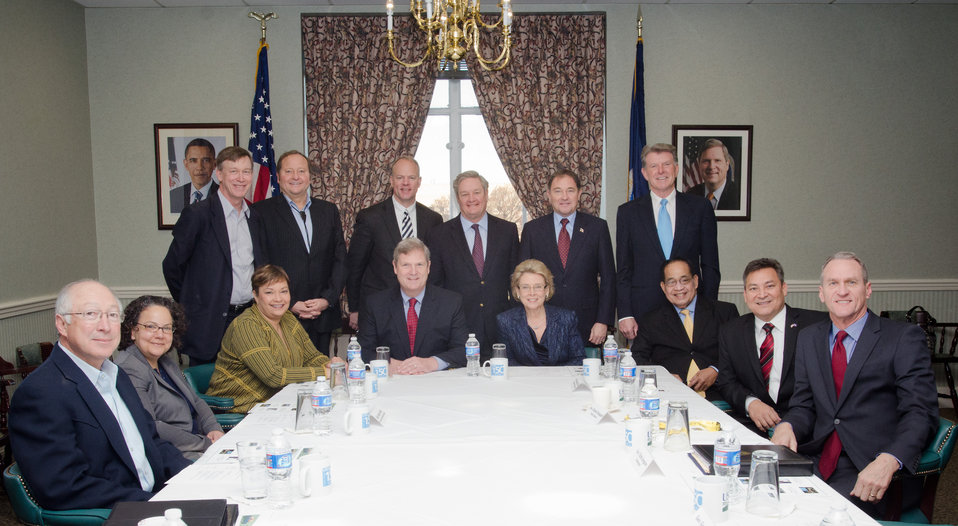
Agriculture Secretary Tom Vilsack hosted a breakfast for Western Governors and Federal Officials, at the Lincoln Room at the United States Department of Agriculture headquarters, in Washington, D.C., on Sunday, February 26, 2012. This event was followed by his speech at the National Governor’s Association Education, Early Childhood and Workforce committee. Seated, left to right, Interior Secretary Ken Salazar, Council on Environmental Quality Chair Nancy Sutley, Environmental Protection Agency Administrator Lisa Jackson, Agriculture Secretary Tom Vilsack, Washington - Governor and Western Governors Association (WGA) Chair Chris Gregoire, Northern Mariana Islands – Governor Benigno R. Fitial, Guam - Governor Eddie Calvo, and South Dakota - Governor Dennis Daugaard. Standing, left to right, Colorado - Governor John Hickenlooper, Montana - Governor Brian Schweitzer, Wyoming - Governor Matt Mead, North Dakota - Governor Jack Dalrymple, Utah - Governor and WGA Vice Chair Gary Herbert, and Idaho - Governor C.L. “Butch” Otter. Arrivingafter the photo was taken were Nevada - Governor Brian Sandoval and Hawaii - Governor Neil Abercrombie.